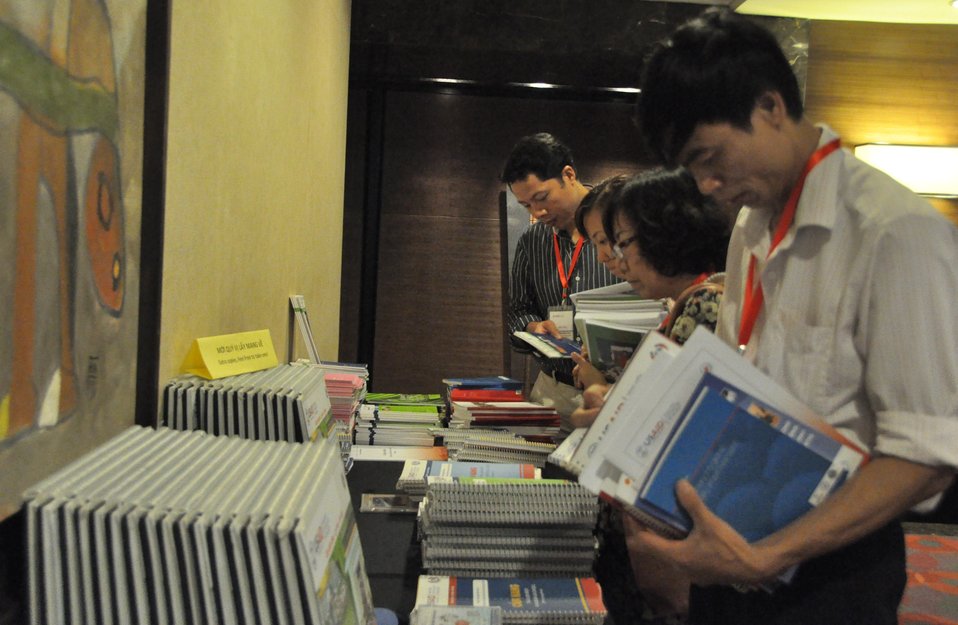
USAID Avian and Pandemic Influenza Initiative

Dissemination Workshop
Hanoi, August 6, 2013.